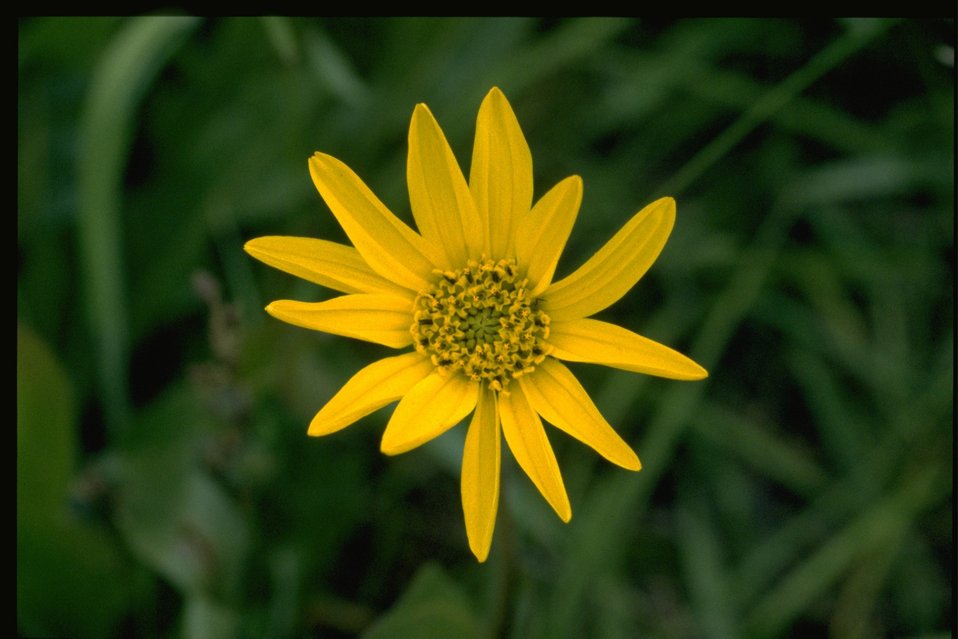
Closeup shot of Eriophyllum lanatum.